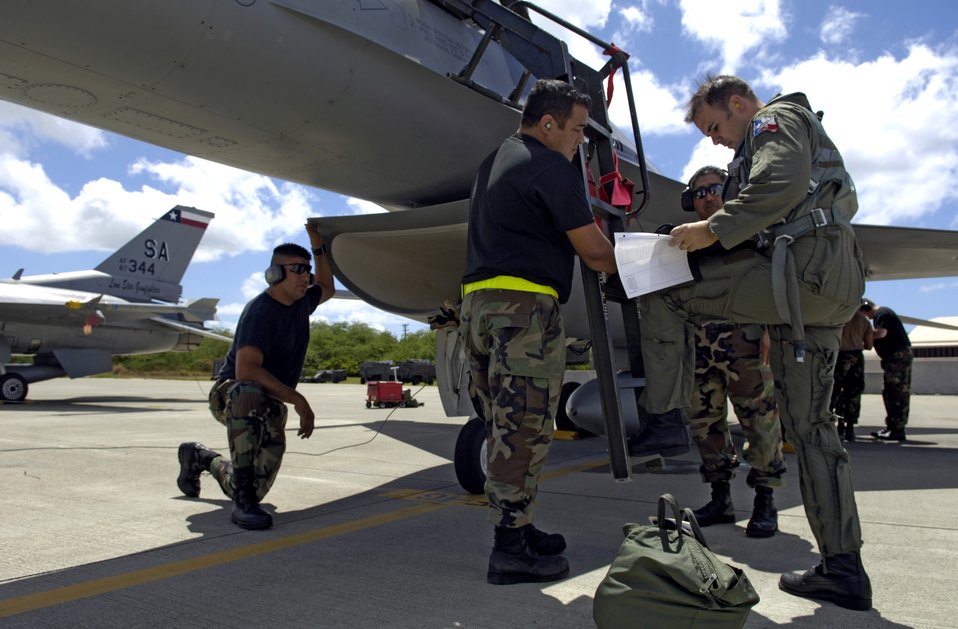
Eagles, Falcons face off in air exercise

Maj. Ryan Jones and a maintenance crew look over a maintenance log after returning from an air-to-air mission to Hickam Air Force Base, Hawaii, Sept. 8 during Exercise Sentry Aloha. The Airmen are from the Texas Air National Guard's 149th Fighter Wing.